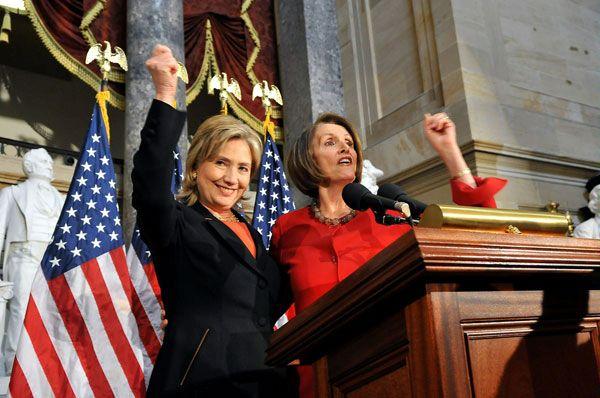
Secretary Clinton With House Speaker Nancy Pelosi

U.S. Secretary of State Hillary Rodham Clinton celebrates the 30th Anniversary of the Women's History Project with House Speaker Nancy Pelosi at Statuary Hall, U.S. Capitol, Washington, D.C., March 25, 2010.